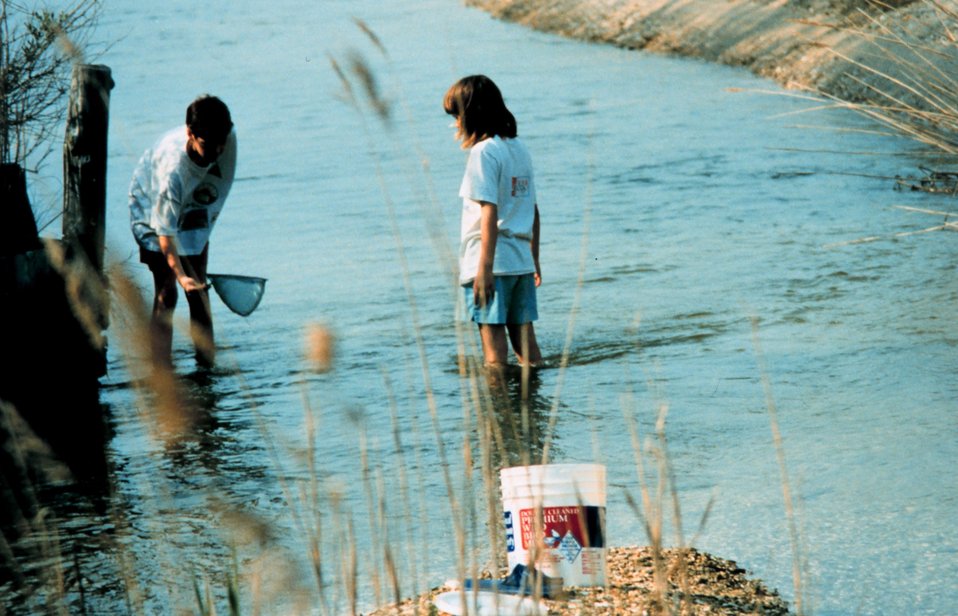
Searching for 'critters' with a small net in a side creek to the Patuxent River.